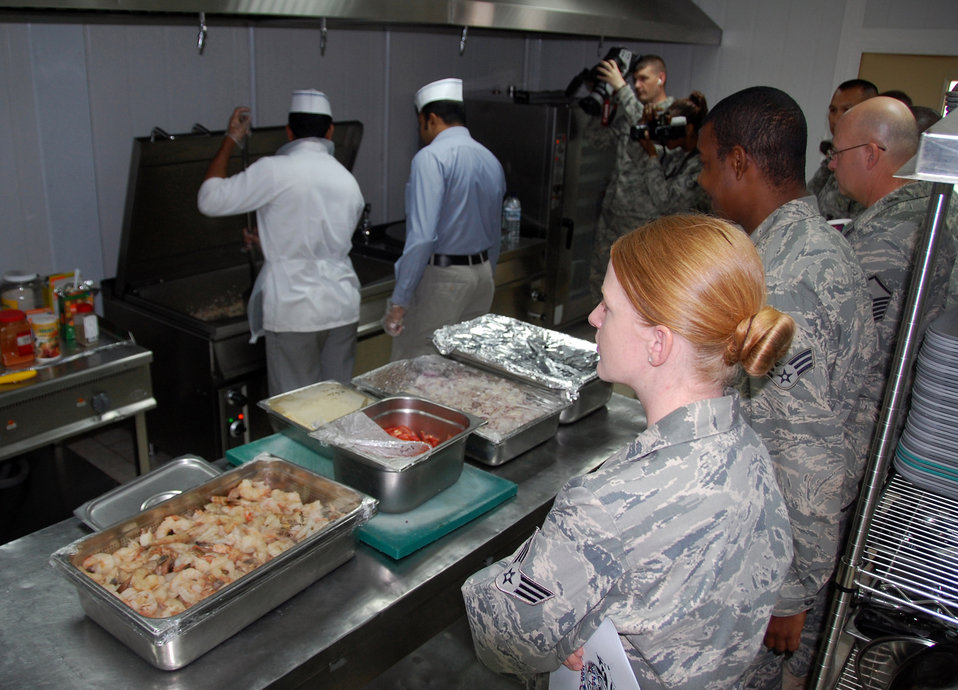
Airmen get first-hand insight to favorite meal

Members of the 387th Air Expeditionary Group watch as the Falcon Cafe staff prepares their favorite Indian food menu items April 6, 2010, during a cooking class at an air base in Southwest Asia.